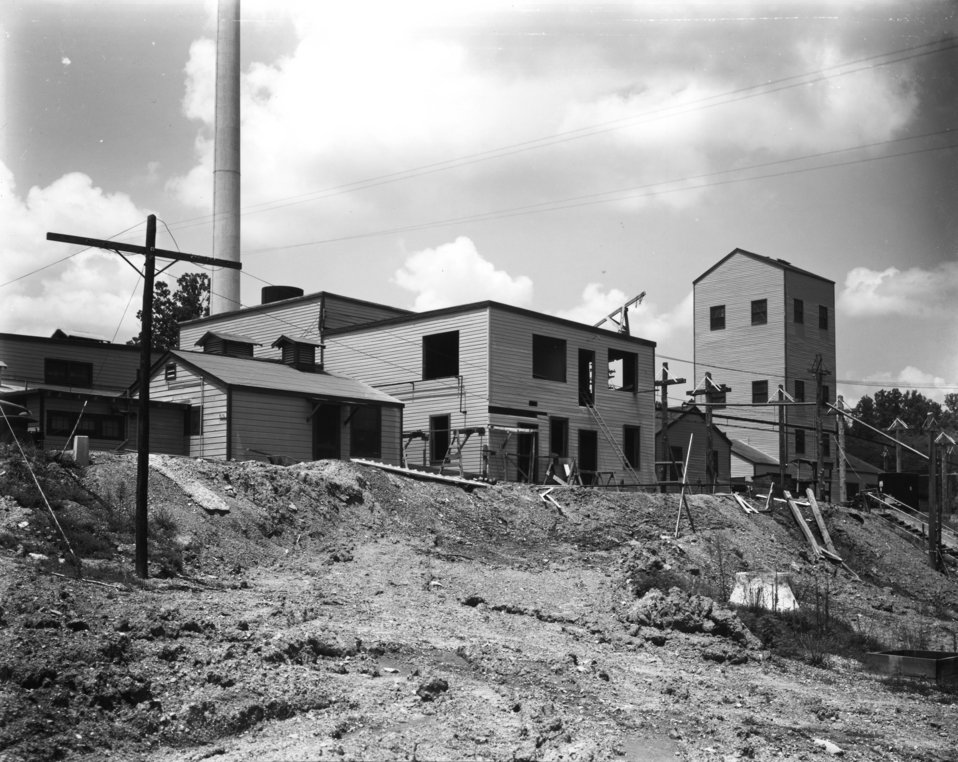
X-10 at Oak Ridge